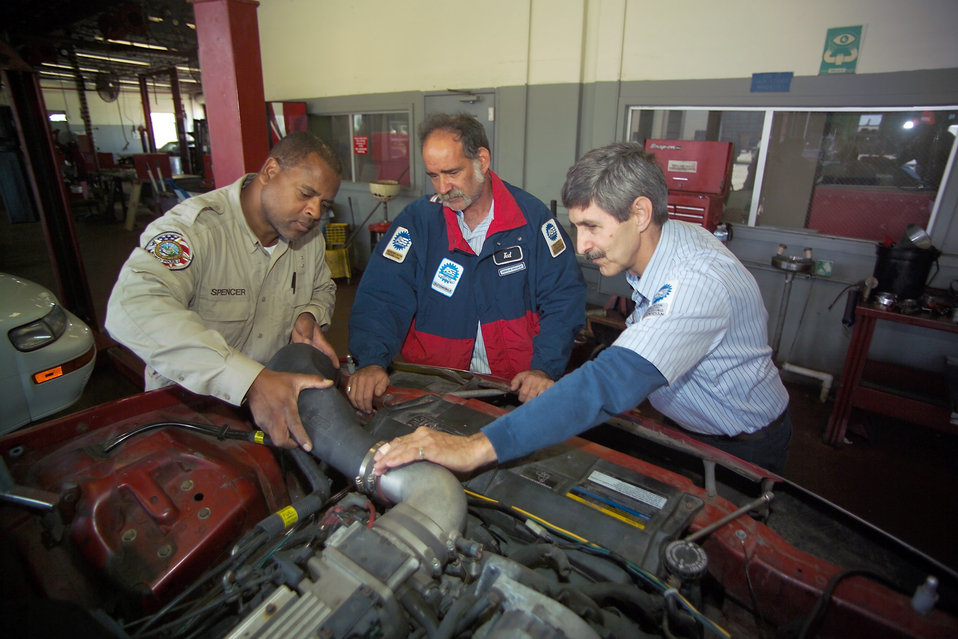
Hobby shop first

PATRICK AIR FORCE BASE, Fla. -- Auto hobby shop customer Ted Spencer (left), lead mechanic Ted Vital, (center) and shop manager Clint Fisher inspect an auto air-intake. The Patrick shop was the first in the Air Force to receive a Blue Seal of Excellence from the Institute of Automotive Service Excellence.